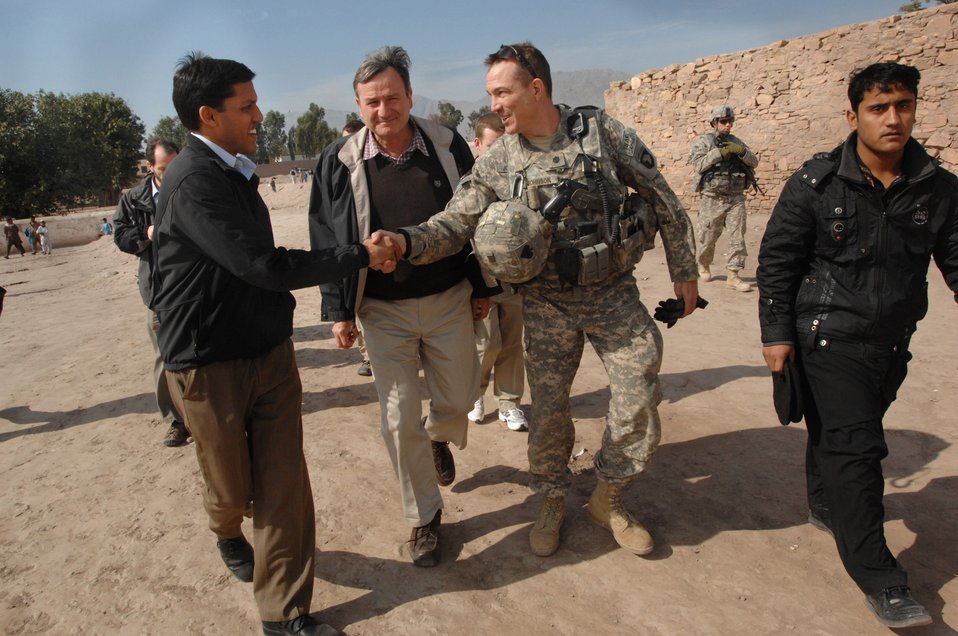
110209sv Shah459

U.S. Ambassador Karl W. Eikenberry and Dr. Rajiv Shah, Administrator of the United States Agency for International Development (USAID), walk with Lt. Col. William Johnson in Surkh Rod, Nangarhar Province, on Wednesday, February 9, 2011. (S.K. Vemmer/Department of State)